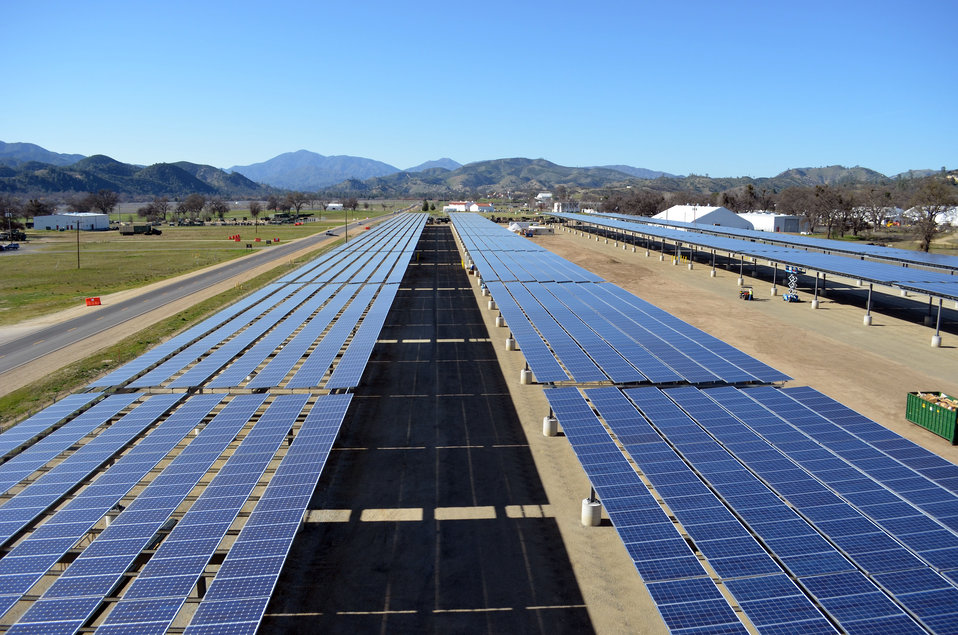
Solar project at Fort Hunter Liggett - March 2013

Solar panel arrays form a canopy at a construction site in Fort Hunter Liggett, Calif., March 12, 2013. The construction site is for phase 1 and 2 of a solar microgrid project at the installation, managed by the U.S. Army Corps of Engineers Sacramento District. Phase 1 was completed in April 2012 and generates one megawatt of power, enough energy to power 250 to 300 homes. Phase 2, scheduled for completion in May 2013, will generate an additional one megawatt of power and is expected to be the second of four at the post. The Sacramento District awarded contracts of $8.4 million for phase I and $9.7 million for phase 2. Along with the energy production, the cover provided by the panel arrays will shade the majority of the post’s vehicles. Fort Hunter Liggett is one of six pilot installations selected by the U.S. Army to be net zero energy, meaning the installation will create as much energy as it uses. (U.S. Army photo by John Prettyman/Released) Watch the video: bit.ly/12dOZuO